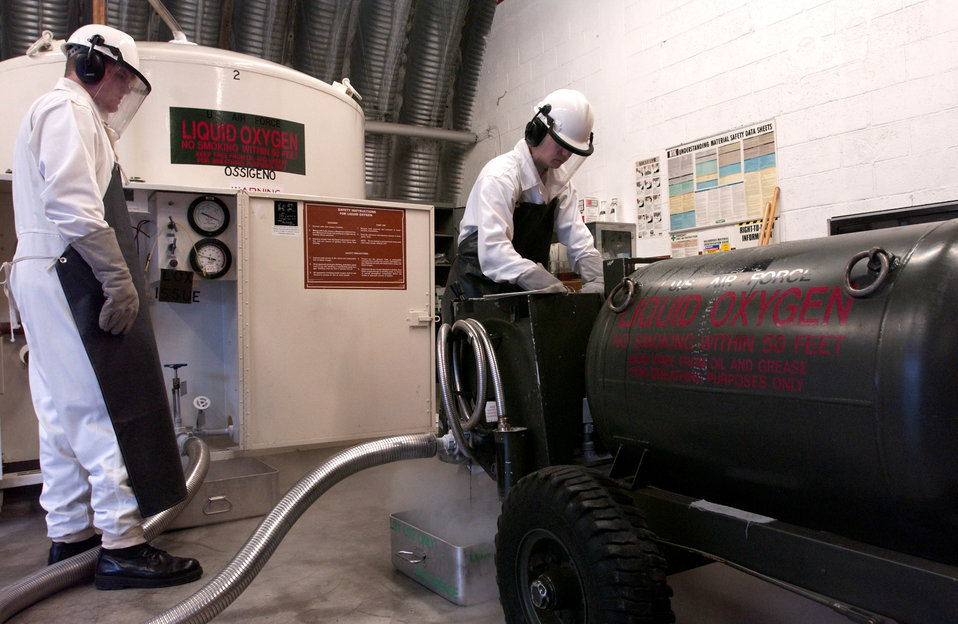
Don't spill

AVIANO AIR BASE, Italy -- Airman 1st Class Allan Selman and Senior Airman Travis Miller service a liquid oxygen cart here Oct. 5. Both Airmen are cryogenics technicians assigned with the 31st Logistics Readiness Squadron.